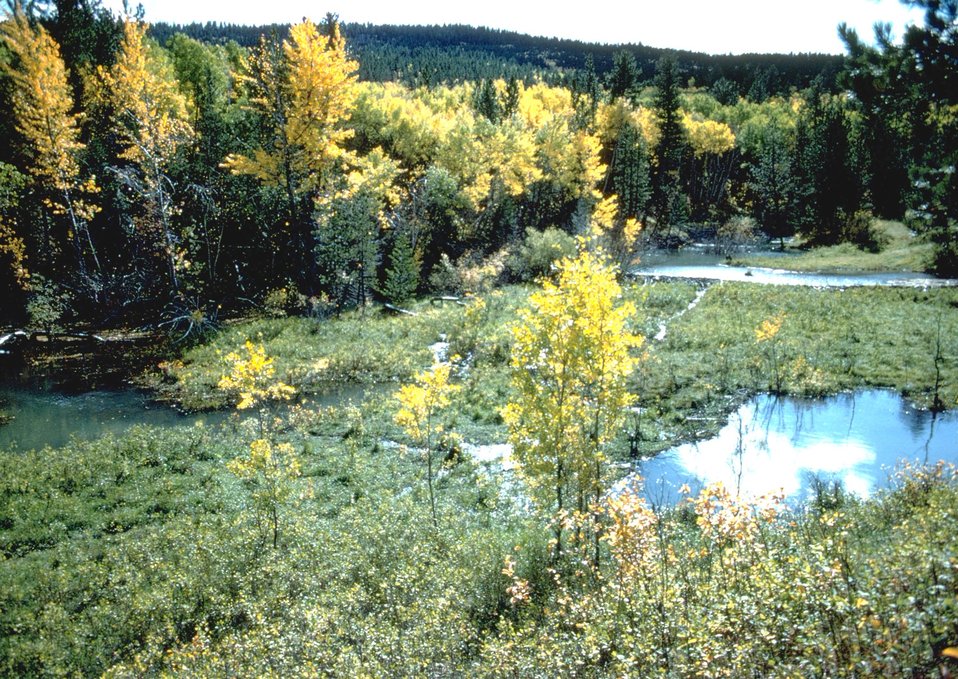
Beaver Creek area